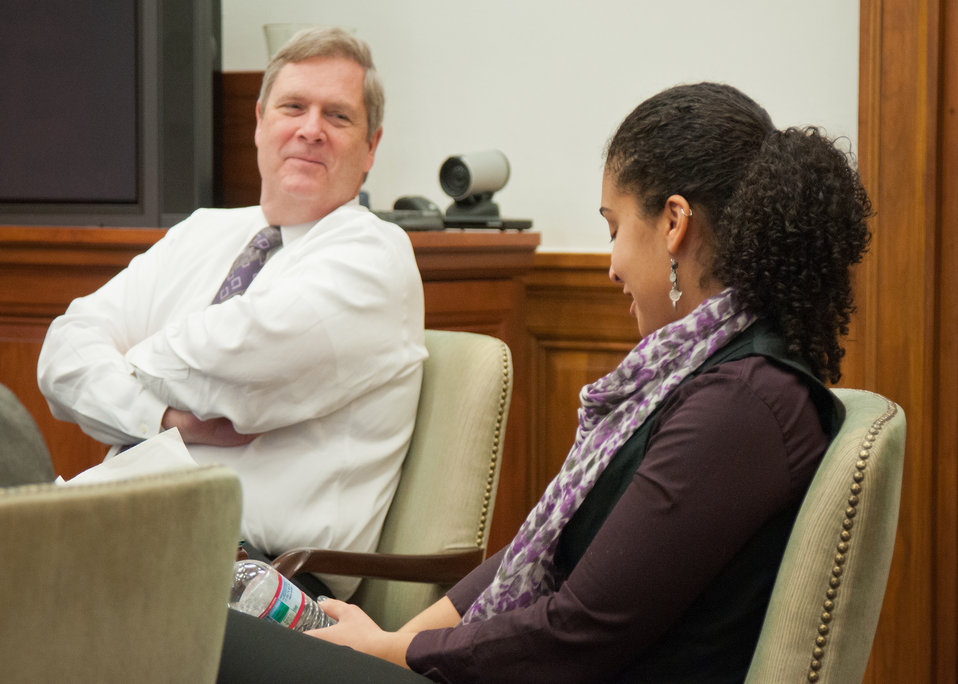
Agriculture Secretary Tom Vilsack (left) welcomes Ryan Caldwell (right), Special Assistant, Office of Congressional Relations on her first day on the job during a Brown Bag lunch to discuss the role the staff plays and to thank them for their dedication and diligence in Washington, D.C. on Monday, January 23, 2012. Caldwell set the theme of the meeting. Secretary Vilsack asked everyone at the luncheon to describe his or her first day at a job.